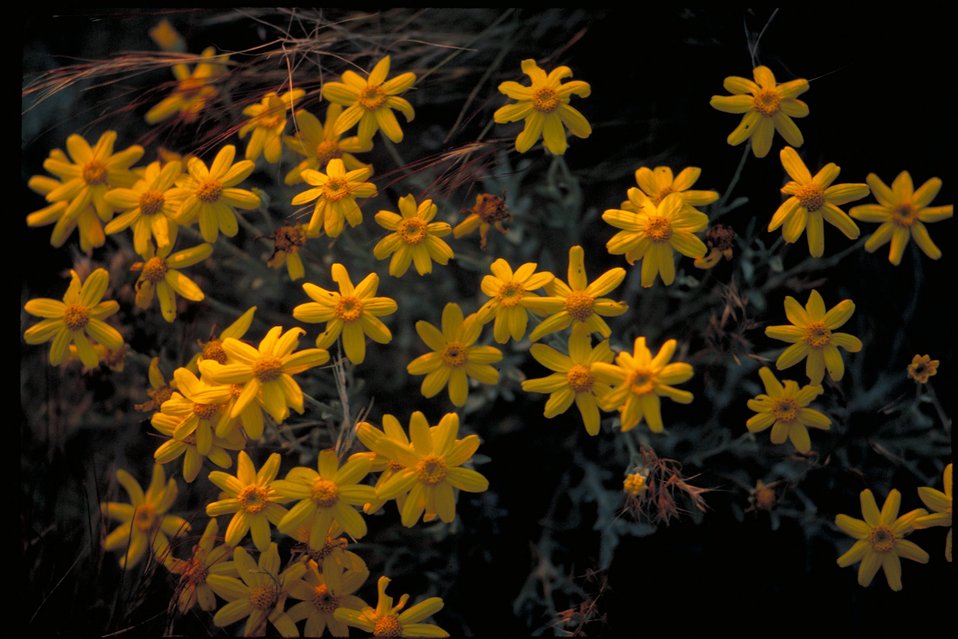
Wildflowers in Military Reserve Park Boise Front Four Rivers Field Office LSRD Lower Snake River District